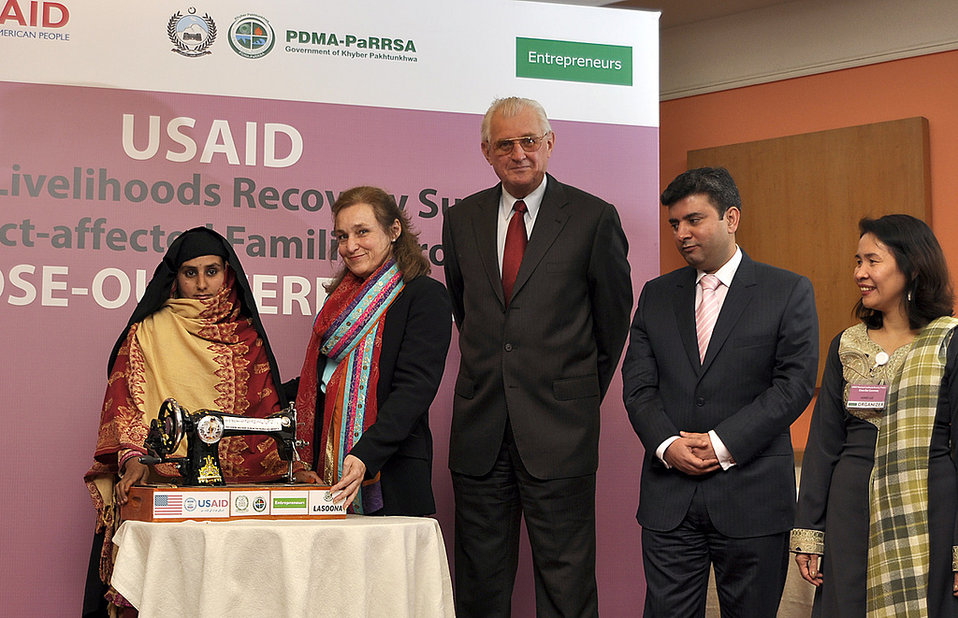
USAID's Malakand Livelihoods Recovery Support to Conflict-affected Families Project

Peshawar, January 29, 2011 - Ms. Constance Arvis, Acting U.S. Consul General in Peshawar, is handing over a sewing Machine to a microgrant recipient from district Swat under USAID's Malakand Livelihoods Recovery Support to Conflict-affected Families Project. Others in the picture are Mr. Edward Birgells, Regional Director, U.S. Agency for International Development (USAID), Pakistan; Mr. Shakeel Qadir Khan, Director General, Provincial Reconstruction, Rehabilitation and Settlement Authority (PaRRSA), Government of Khyber Pakhtunkhwa; and Ms. Agnes Luz, Chief of Party, USAID Entrepreneurs Project.